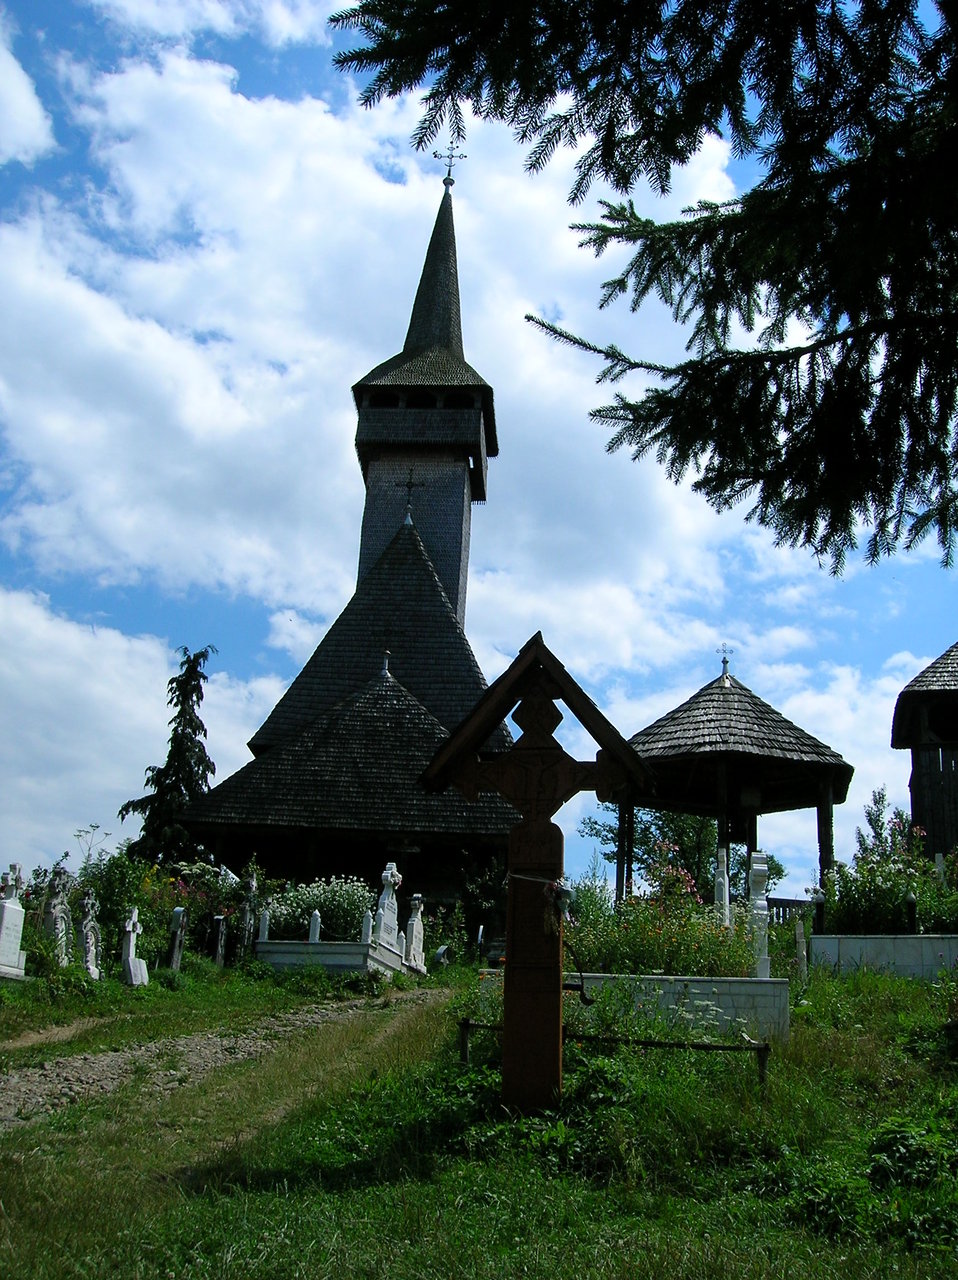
Wooden church in Botiza (Maramure≈ü, Romania). Fran√ßais†: Eglise en bois √† Botiza (Maramure≈ü, Romania).